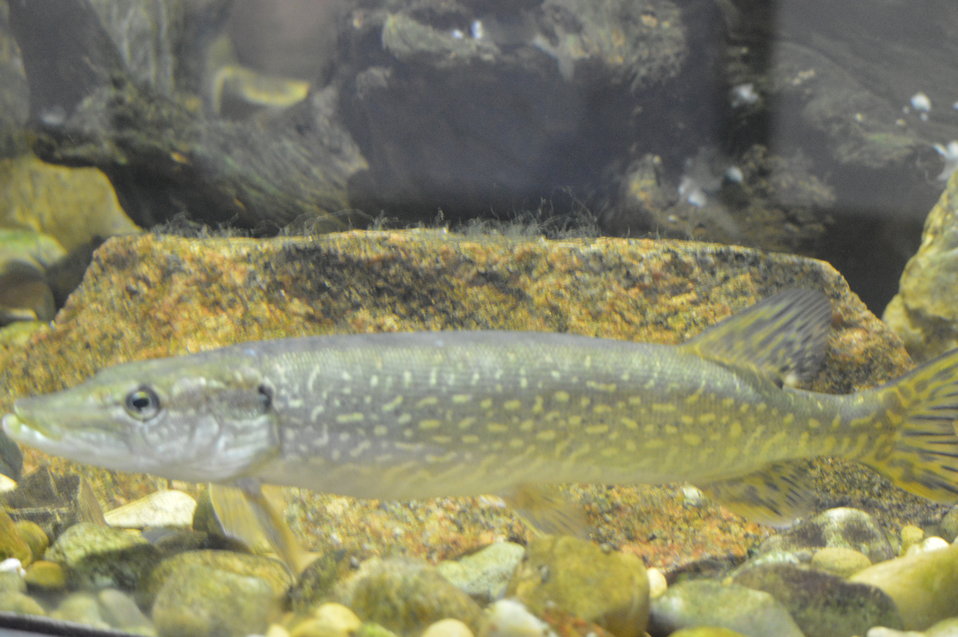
Northern Pike in aquarium

Garrison Dam National Fish Hatchery in North Dakota.